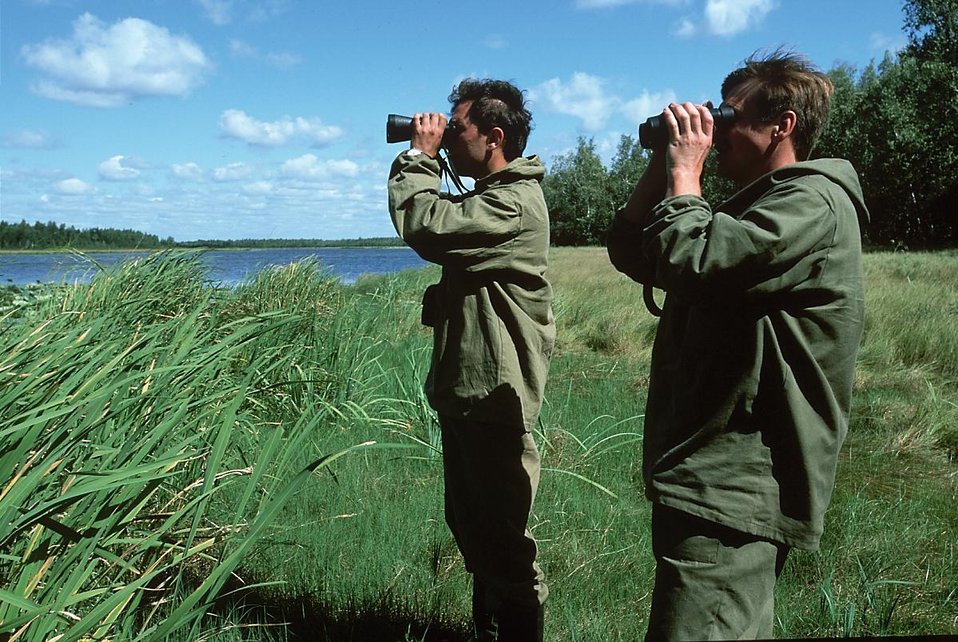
Misha Sergei Lotus

Staff of Khingansky Nature Reserve, Khabarovsk Region, Russian Far East.